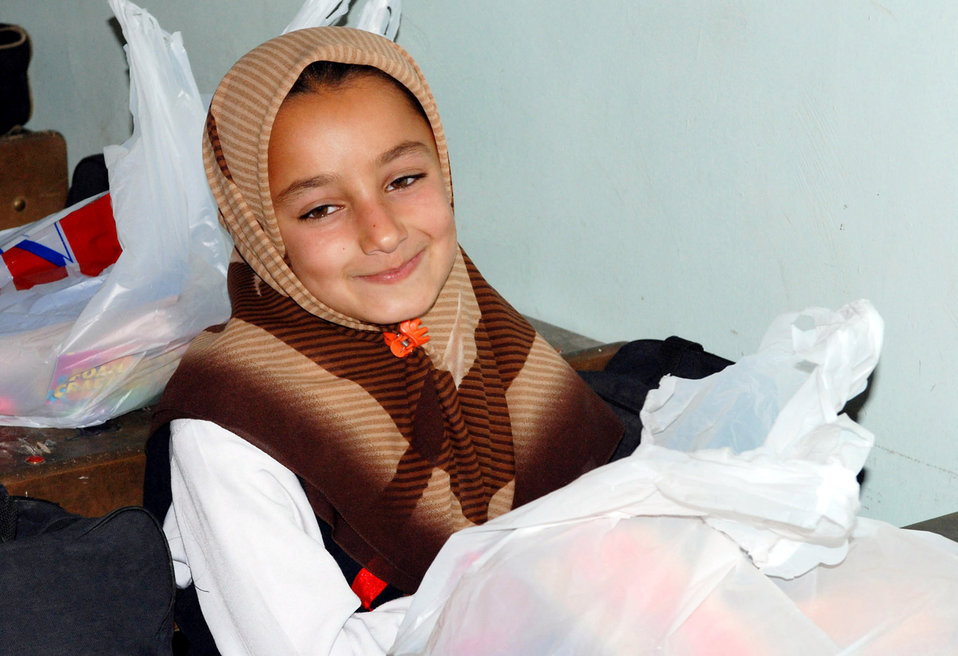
Making Iraq's future brighter: Operation School Supplies

A girl smiles after receiving a bag of school supplies at a school April 18 near Kirkuk Air Base, Iraq. This effort is part of Operation Iraqi School Supplies sponsored by the 506th Air Expeditionary Group. School supplies are sent from people all over the United States.